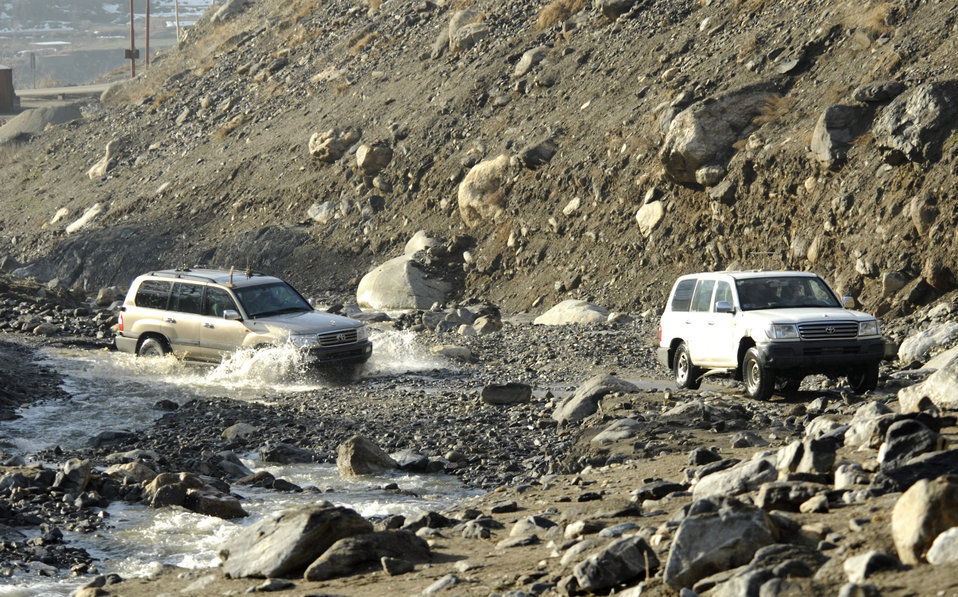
American servicemembers visit Afghan villagers

U.S. military members of Afghanistan's Panjshir Provincial Reconstruction Team drive through a valley March 3 to conduct a site survey. The PRT is looking into the possibility of paving a road that leads to large quantities of marble that would give the province the ability to start mining operations and in entice investors to the area.